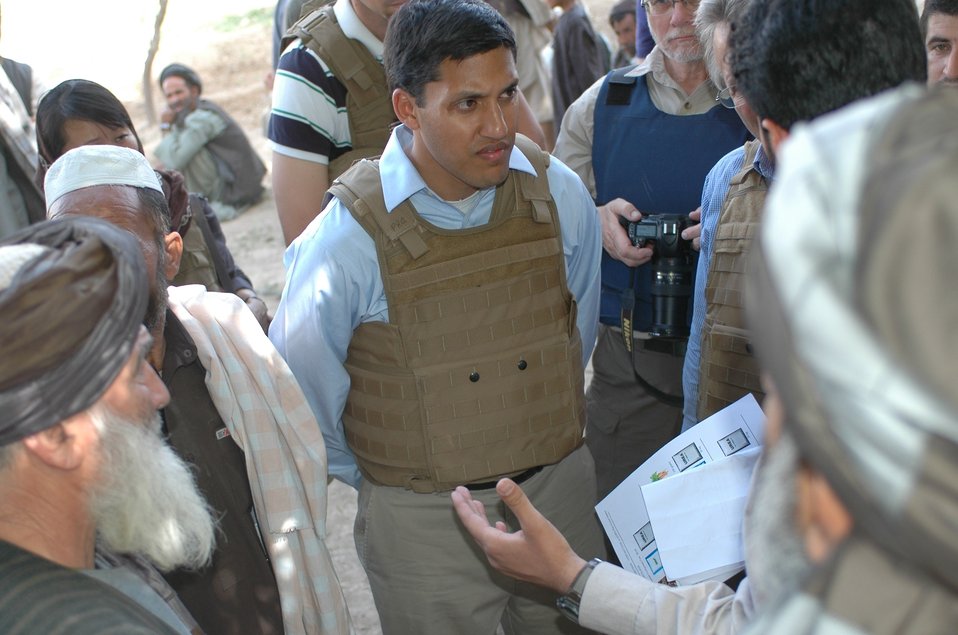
Dr Shah Visits Argandab April 10, 2010